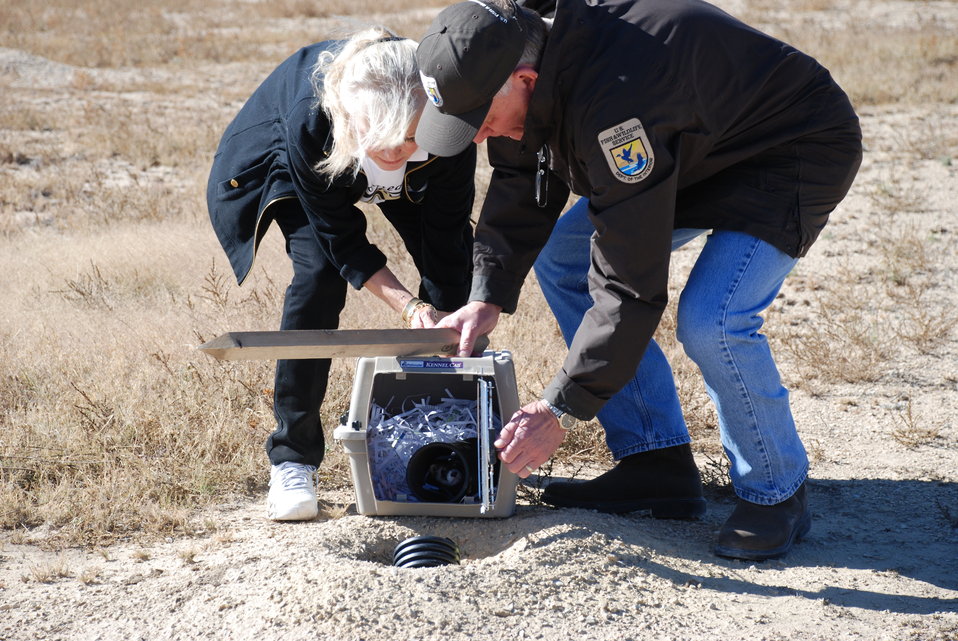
Black-footed Ferret Release

On Wednesday, October 30, 2013, thirty endangered black-footed ferrets were released onto cattle rancher Gary Walker's land, west of Pueblo, Colorado.

The release launched a potentially new way of preserving endangered species and was accomplished by way of a Safe Harbor Agreement (SHA). This SHA provides opportunities for private and Tribal landowners to volunteer their lands for reintroductions of this endangered species without affecting their land-use activities beyond mutually agreed-upon measures. It also extends these assurances to surrounding non-participating lands and other landowner interests. This SHA will be an important step in promoting the recovery of this iconic species.